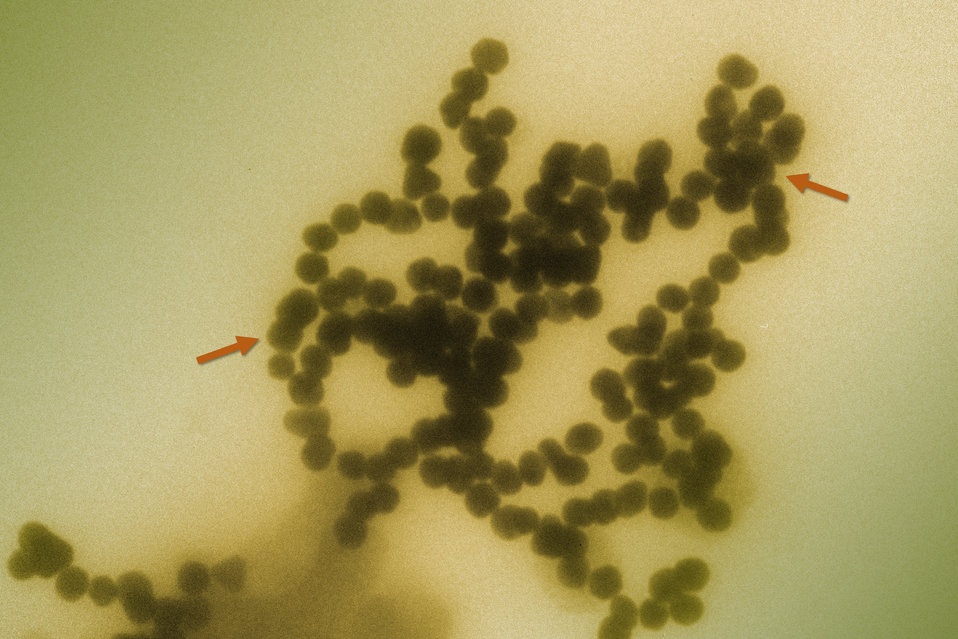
Nanoparticles

Transmission electron micrograph of gold nanoparticles clustering in solution. The distance between the two red arrows is approximately 280 nanometers, some 200 times smaller than the diameter of a human hair. The individual nanoparticles are approximately 15 nanometers in diameter, about the distance across 40 side-by-side sodium atoms.